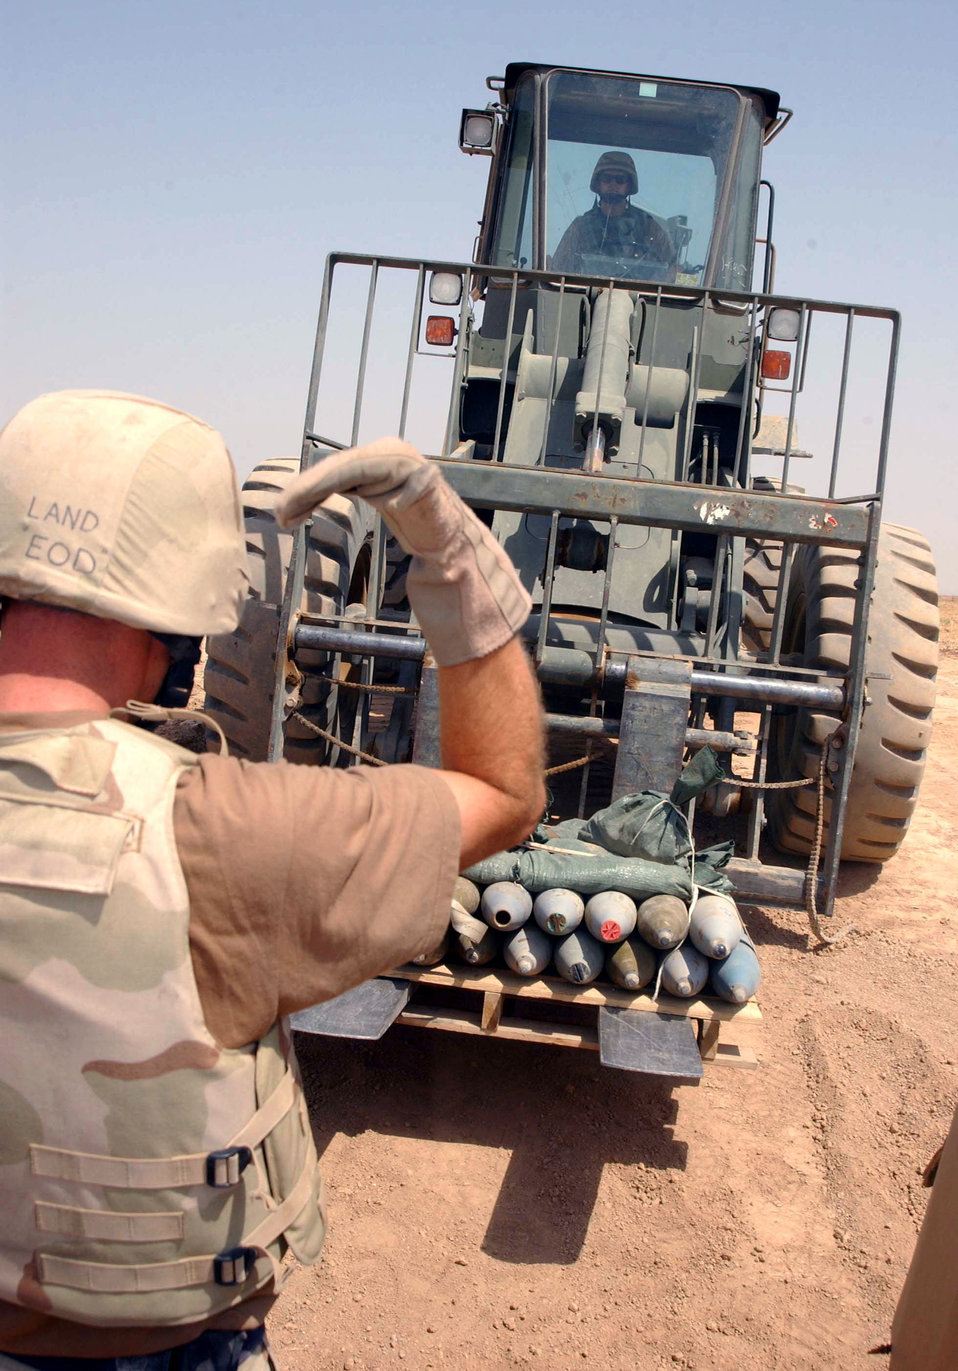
Bomb dump

KIRKUK AIR BASE, Iraq -- Tech. Sgt. Michael Land of the 506th Expeditionary Civil Engineer Squadron guides a forklift into a demolition pit here June 15. The explosives ordinance team disposed of five separate 1,500 pound-pits by placing approximately 110 pounds of C-4 on each set. The munitions were gathered from around the local area and the base.